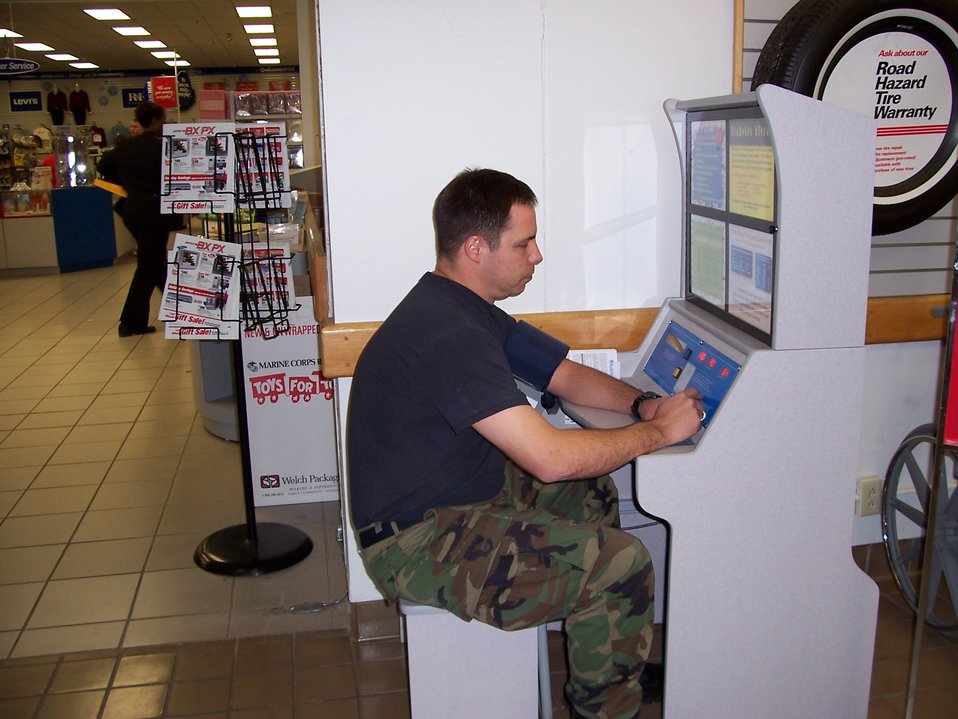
Contractor controllers vital link between airport, deployed base

MANAS AIR BASE, Kyrgyzstan -- Vince Alford, a tower controller here, talks to a KC-135 Stratotanker pilot about a change in flight plans here. Mr. Alford is an Air Force Contingency Augmentation Program liaison contract controller who monitors 40 to 70 civilian and military aircraft movements a day on the dual-use runway the base shares with Manas International Airport.